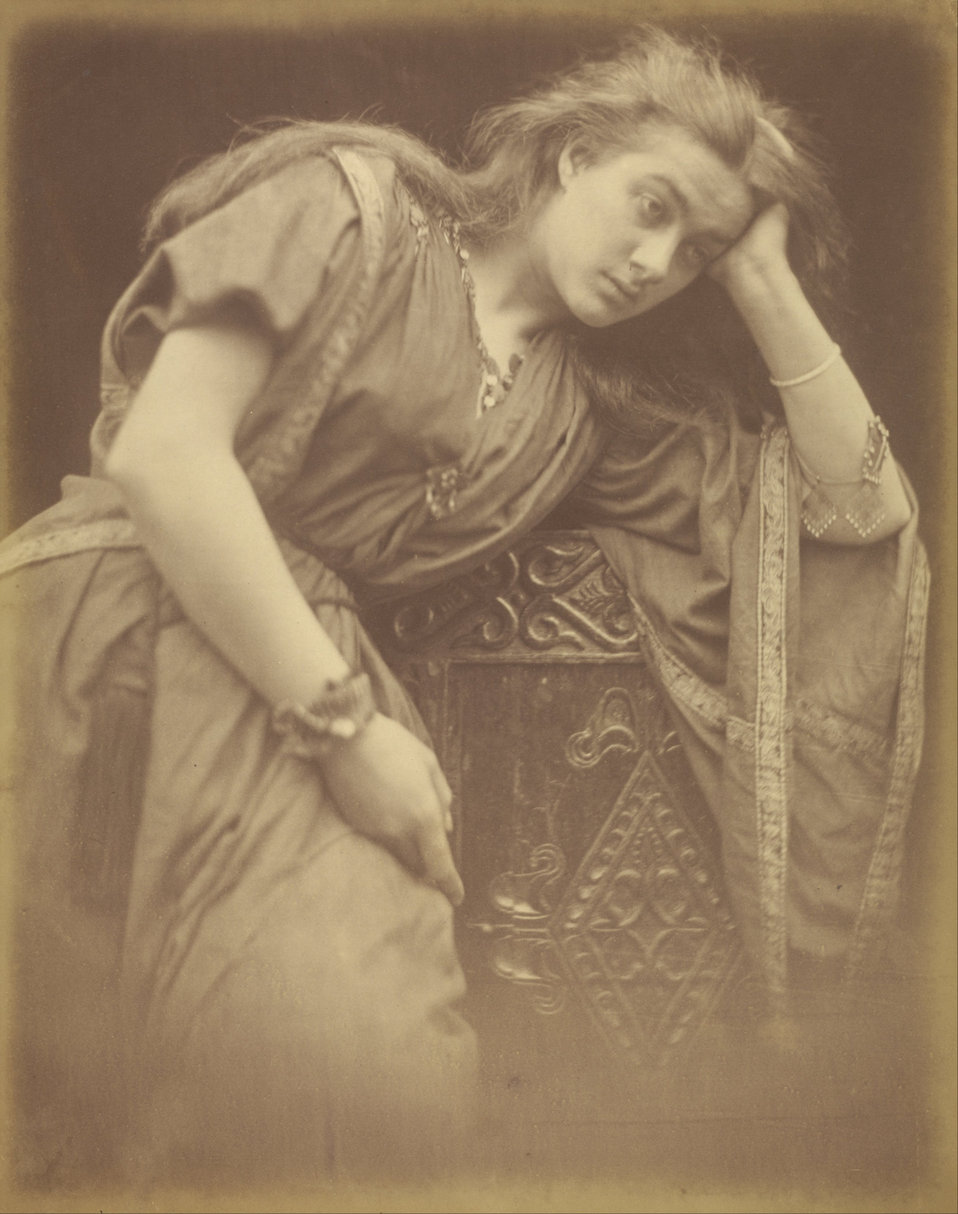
'She said I am aweary aweary I would that I were dead' - Google Art Project